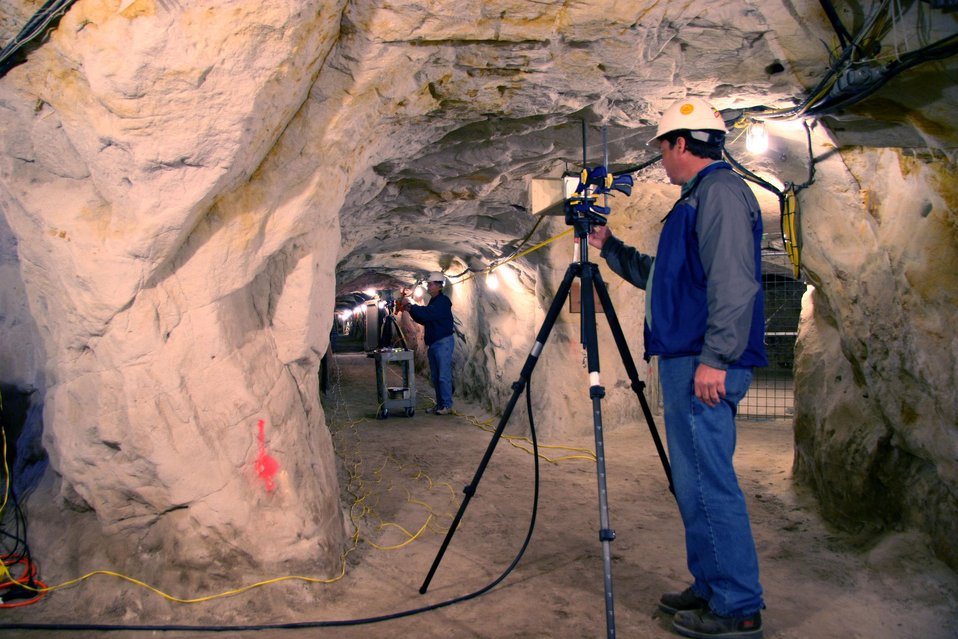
Radios in Tunnels

Electronics Engineer Dennis Camell (foreground) aligns antennas in an old California silica mine for a NIST study identifying optimal frequencies for radio signal transmissions in tunnels.